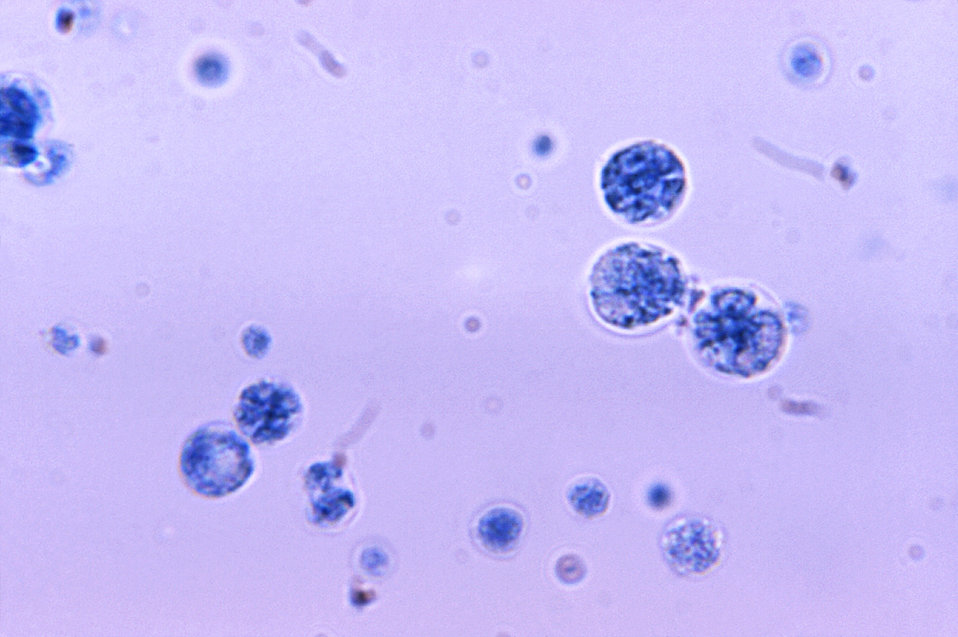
At a magnification of 1125X, this photomicrograph revealed the presence of a number of Prototheca wickerhamii algal organisms.